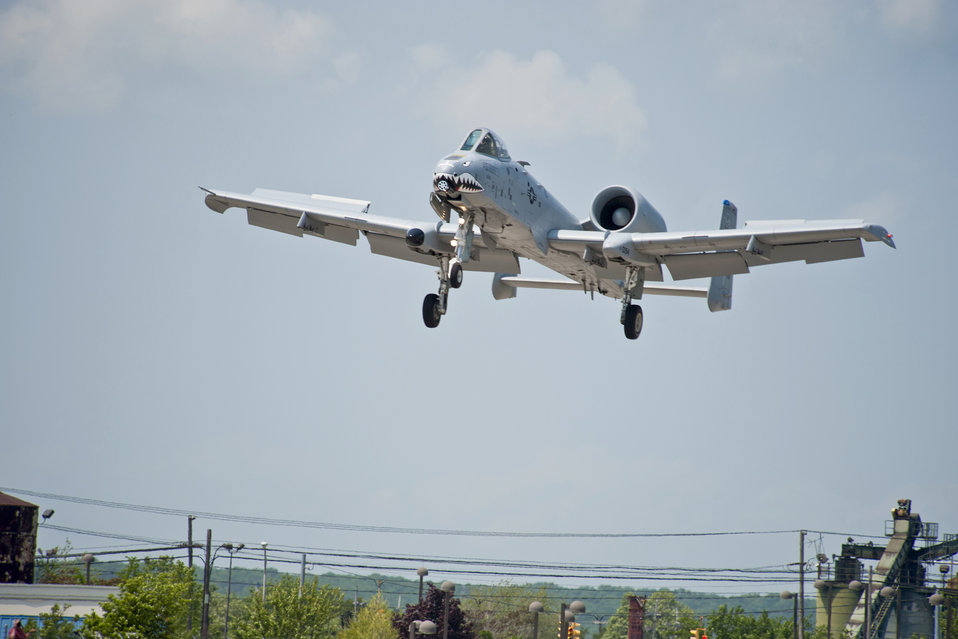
A-10 East Demonstration Team

Maj. Dylan Thorpe prepares to land his A-10 Thunderbolt II after a successful flight May 28, 2011, during an air show at Jones Beach, N.Y. Major Thorpe is a pilot with the A-10 East Demonstration Team.